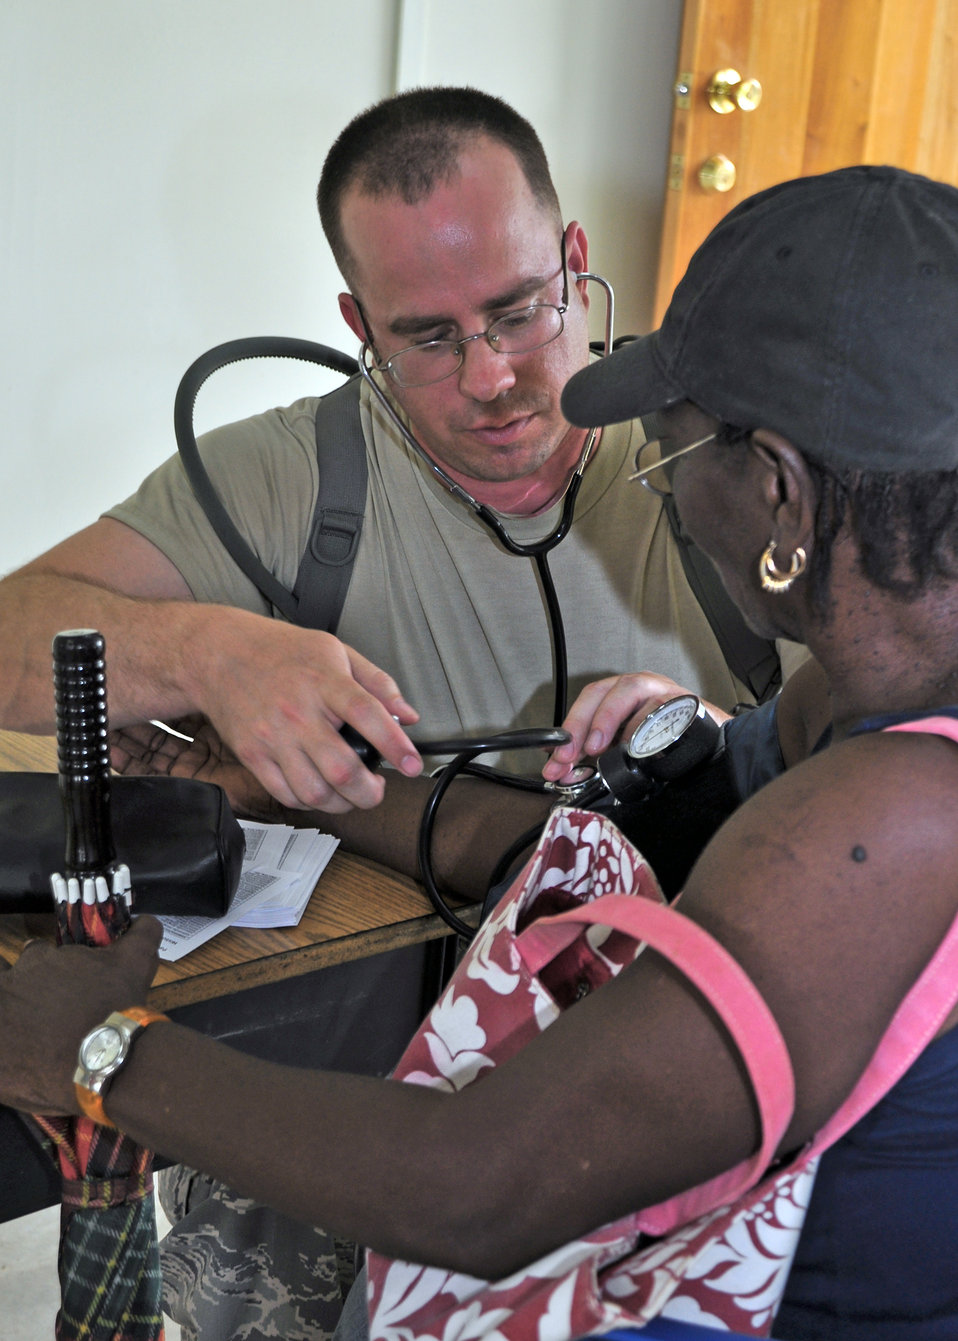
Soto Cano servicemembers provide 630 people medical care in Belize

Capt. David Bradley checks blood pressure during a training mission to the villages of St. Margaret's and Armenia March 3, 2010, in Belize. The joint U.S. and Belize team saw more than 630 patients with medical issues ranging for colds to strokes. Captain Bradley is a Joint Task Force-Bravo medical element nurse.